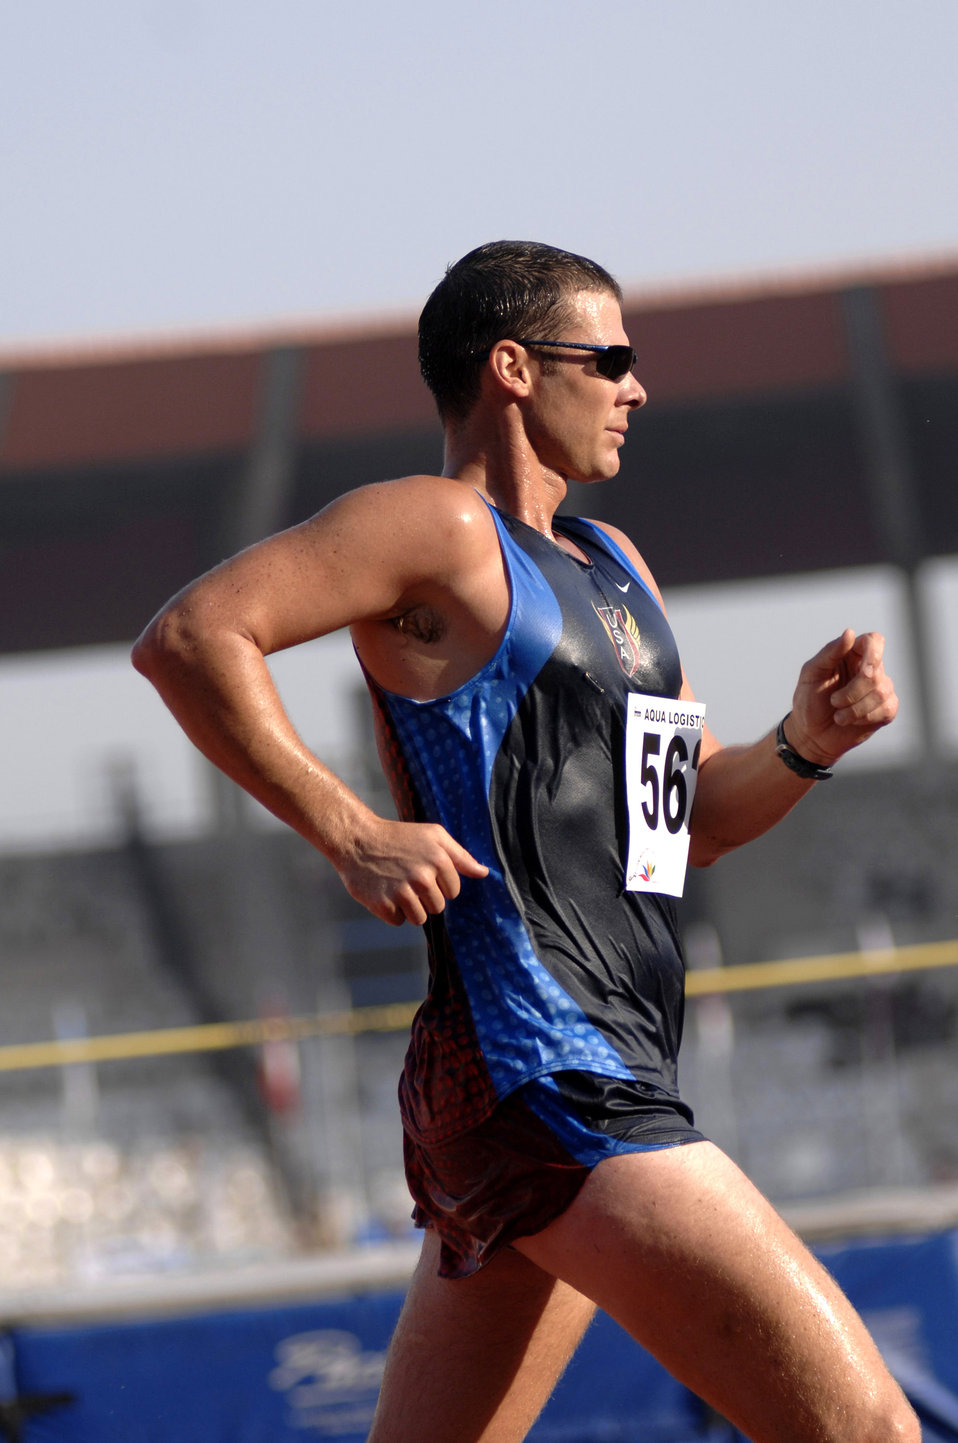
Americans compete in Military World Games

Army Sgt. John Nunn speed walks during the Military World Games competition Oct. 15 in Hyderabad, India. He placed ninth in the event. The Conseil Internationale du Sport Militaire's Military World Games event is the largest international military Olympic-style event in the world. In this year's fourth edition of the Games, 103 countries and more than 5,000 athletes are scheduled to compete Oct. 14 through 21 in boxing, diving, soccer, handball, judo, military pentathlon, parachuting, sailing, shooting, swimming, volleyball and track and field. The purpose of the Military World Games is to promote friendship through sport.